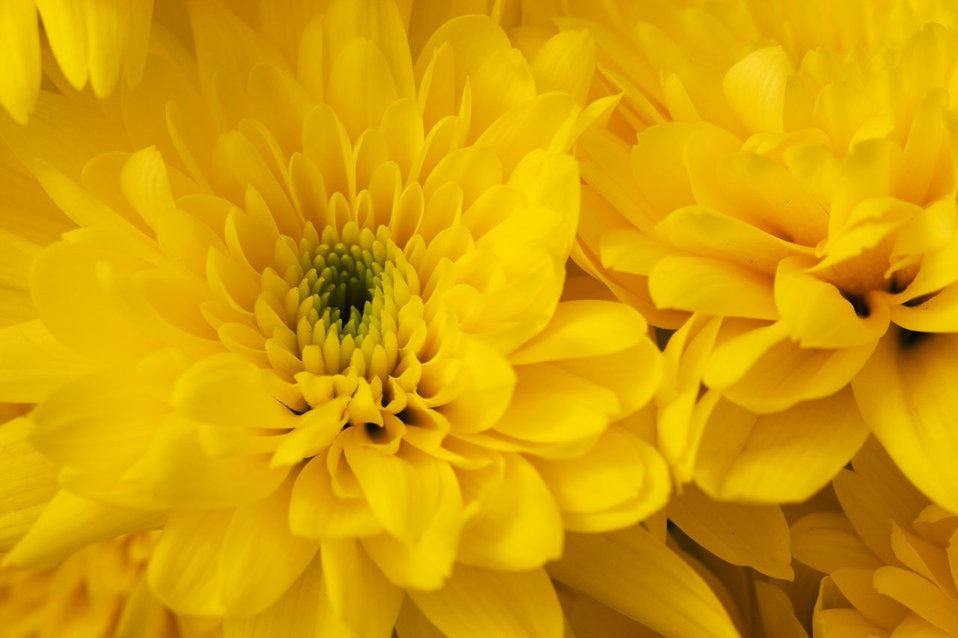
Chrysanthemum

Yellow chrysanthemum flowers.